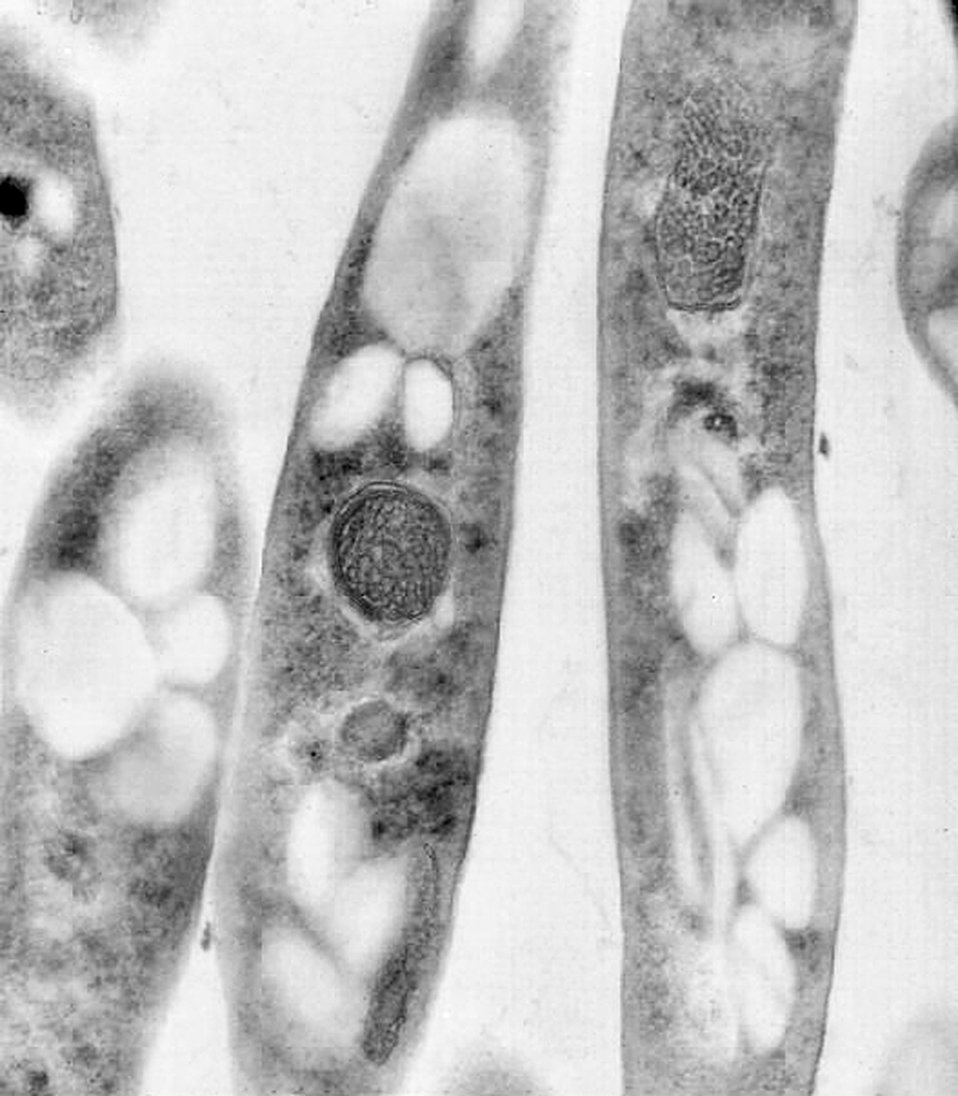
Transmission electron micrograph of Bacillus anthracis.